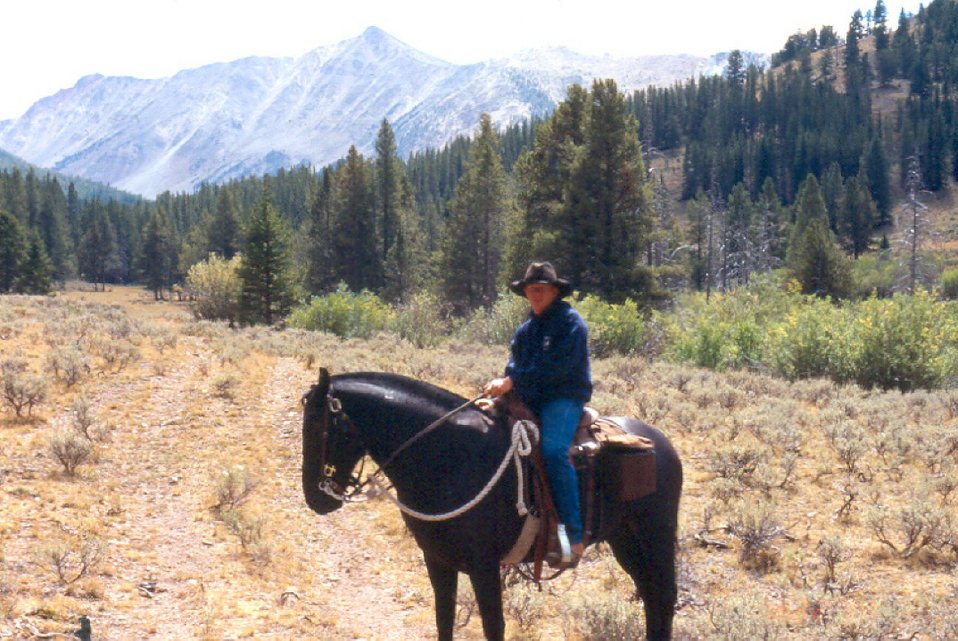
Horse riding People Salmon Field Office UCSC Upper Columbia Salmon Clearwater District